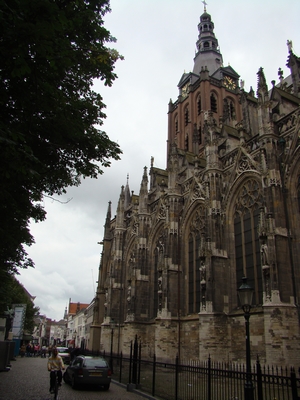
Nedersaksies: S hertogenbosch sint jan